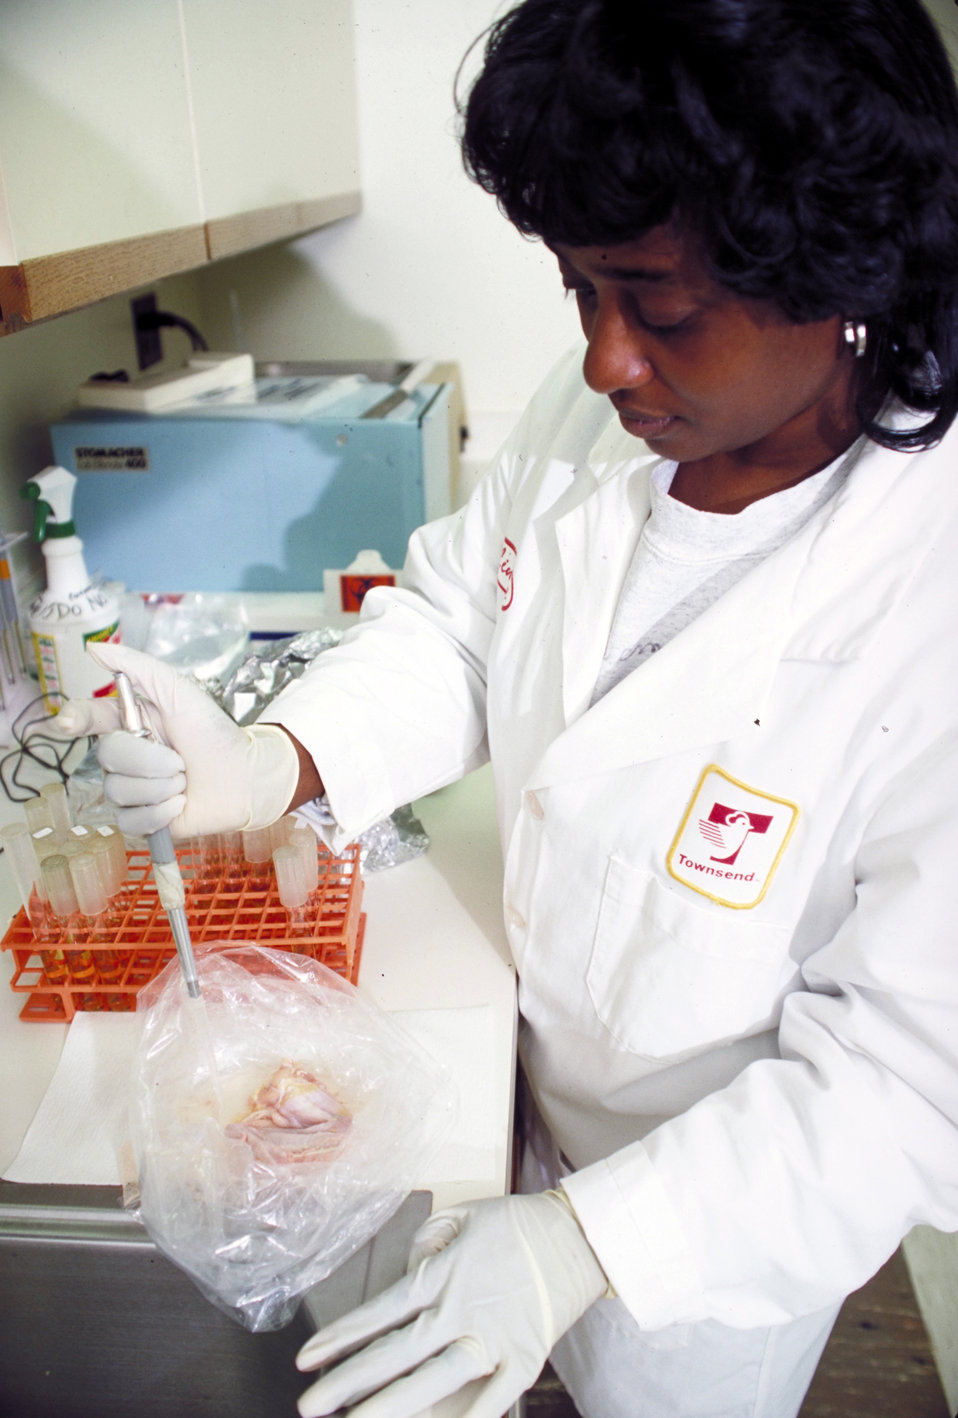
Plant scientist conducts a microbiological test for the presence of specific pathogenic microorganisms in or on the product as part of the facility’s compliance with the U.S. Department of Agriculture’s (USDA) Food Safety Inspection Service (FSIS) plan on May 13, 1996.